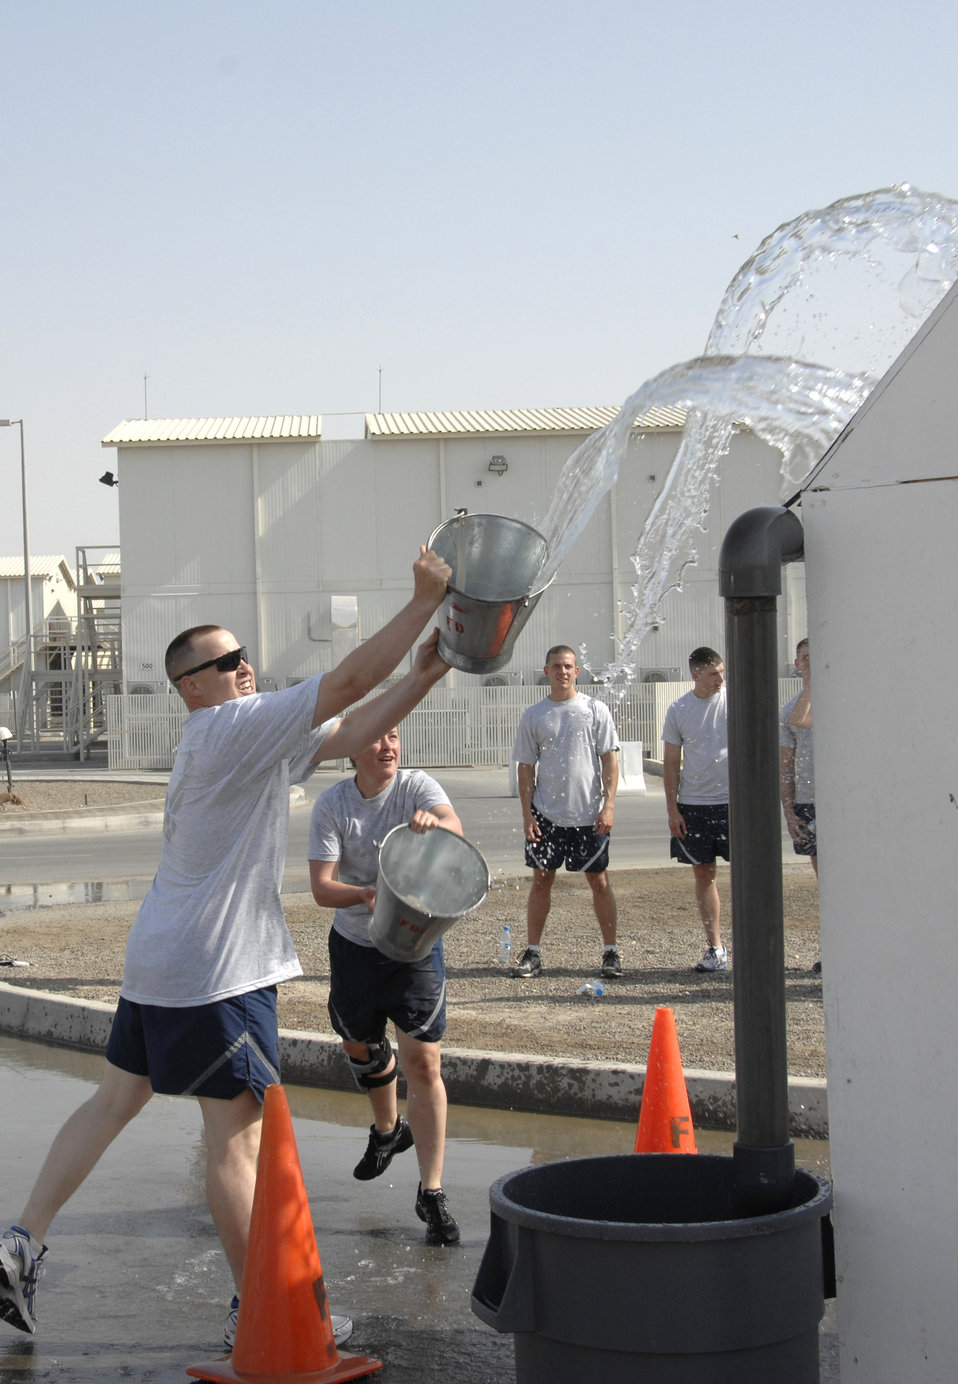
Fire muster challenges Airmen

Technical Sgt. Lee Kvittem and Airman 1st Class Heather Bennett take part in the bucket brigade competition during a fire muster challenge March 21 at an air base in Southwest Asia. For this challenge, competitors had to throw buckets of water on a simulated roof, which would run down a gutter and fill a garbage can. Once the water reached the correct level, the challenge was complete and the team's time was recorded. Both were from the 380th Expeditionary Security Forces Squadron fire muster team.